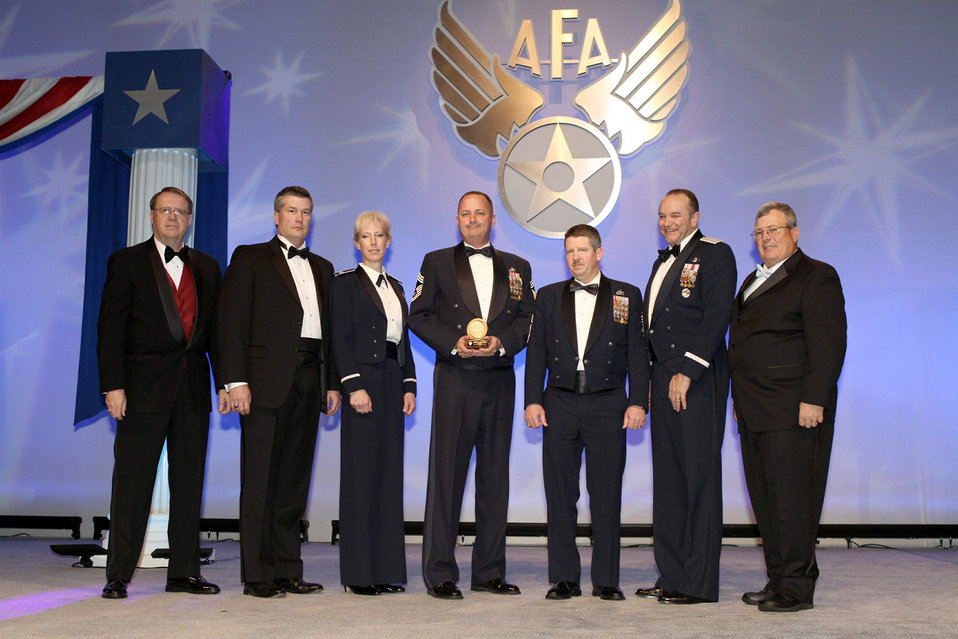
Ira Eaker Historical Fellows

Four civil engineers were designated as Ira Eaker Historical Fellows by the Air Force Association Feb. 18, 2011 in Orlando, Fla at the organization's 20th Anniversary of Operation Desert Storm gala. From left are Tim Brock, Air Force Gala chairman; retired Air Force Col. Marvin Fisher; Col. Elizabeth Brown, Air Force Associate Civil Engineer; Chief Master Sgt. Thomas Gilpin, 436th Civil Engineer Squadron, Dover Air Force Base, Del.; Chief Master Sgt. Carey Casey, 49th Materiel Maintenance Squadron, Holloman AFB, N.M.; Gen. Philip Breedlove, Air Force vice chief of staff; and Central Florida AFA Chapter President William Yucuis.